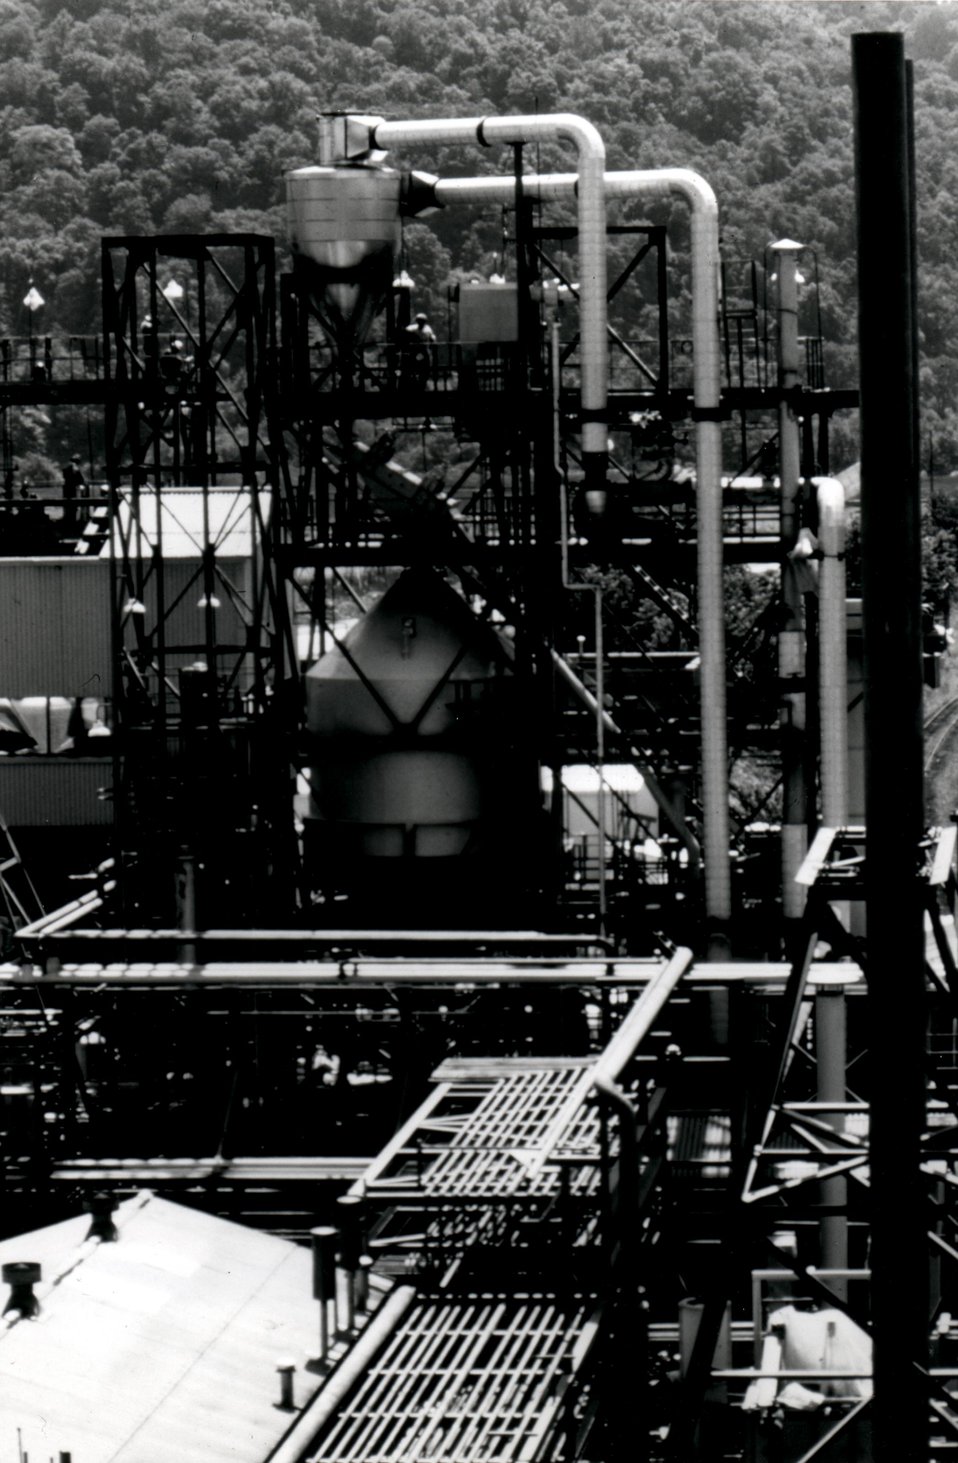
Under contract to ERDA, Fluor Engineers and Constructors, Los Angles, California, has revamped and put into operation this coal liquification pilot plant at Cresap, West Virginia, 25 miles from Wheeling. Circa 1977.